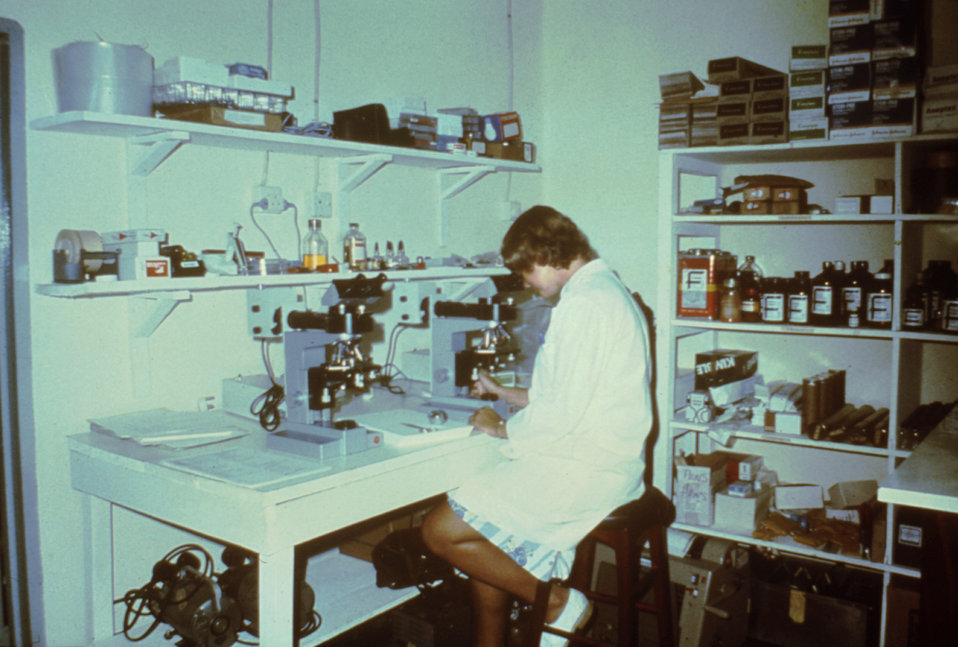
Here, Shirley Ross is working at a microscope in a Kenema, Sierra Leone laboratory during a Lassa fever investigation.